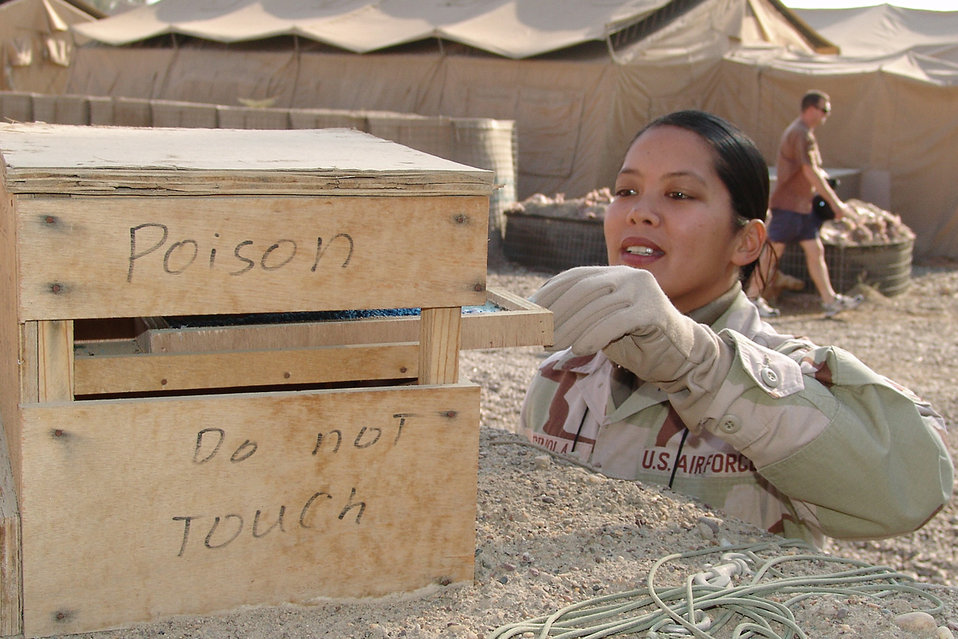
Pests no match for 'Bug Girl'

BAGHDAD, Iraq -- Senior Airman Amy Arriola changes a tray of fly bait. She is the pest controller for the 447th Expeditionary Civil Engineer Squadron at Camp Sather here, and is deployed from Guam Air National Guard's 254th CES.